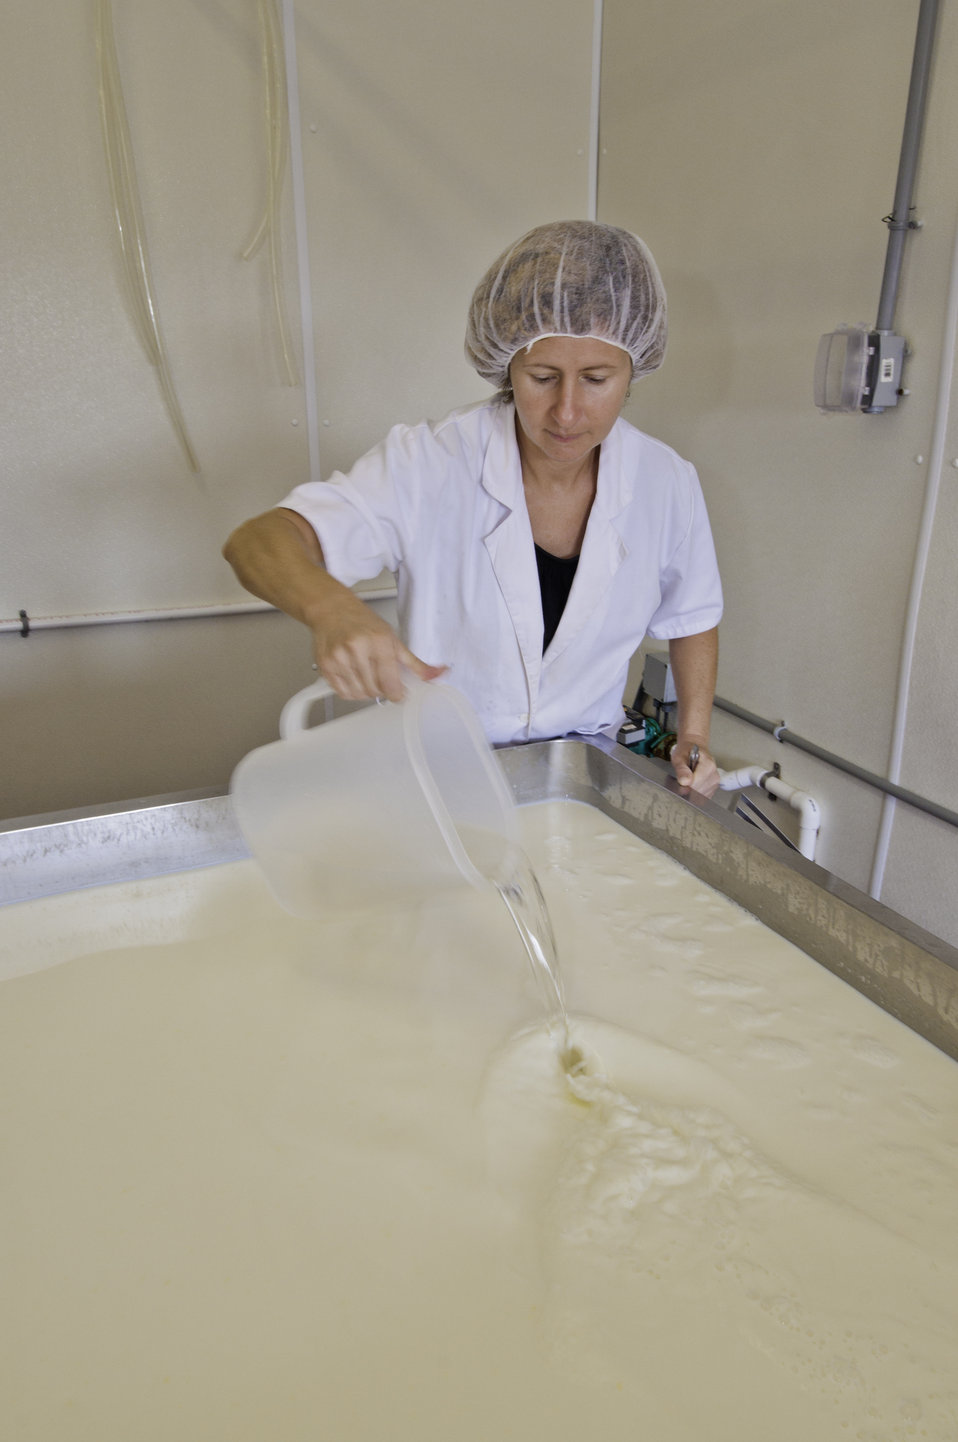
Chapel’s Country Creamery owner Holly Foster in Easton, MD adds vegetable rennet to 1150 pounds of milk to produce the milk curd used to produce the dairy’s “Bay Blue” cheese. The rennet is added to heated milk and let to set, until it reaches a custard like consistency. The time varies from 30 minutes to 2 hours. The dairy uses fresh raw milk 12-24 hours old. The milk is all-natural and contains no synthetic hormones, antibiotics, or chemical compounds.